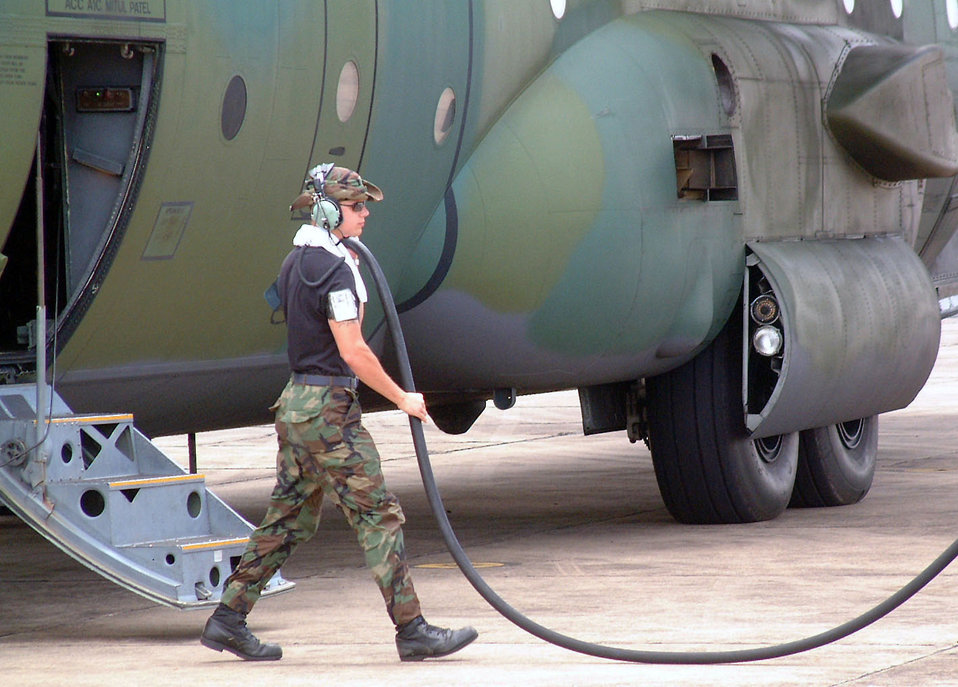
Cobra Gold

UDON THANI, Thailand -- Staff Sgt. Jonathan Rhoads, a communications navigation specialist with the 353rd Maintenance Squadron, unplugs an MC-130H Combat Talon II from external power before a mission here. Rhoads and other members of the 353rd Special Operations Group deployed here for Cobra Gold 2003, a multination, multiservice exercise designed to ensure regional peace, strengthen the ability of the Thai armed forces and demonstrate U.S. resolve in the region.